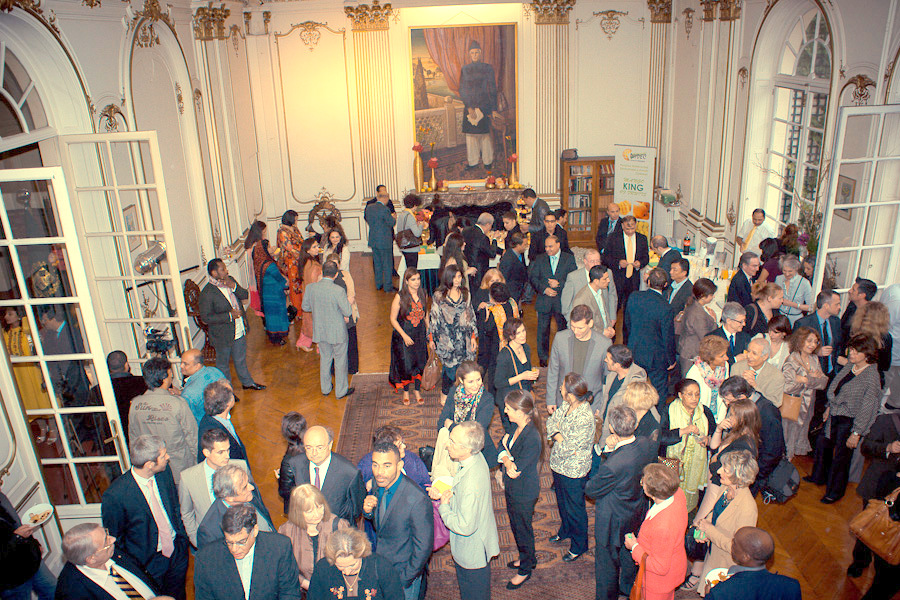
Celebrating Pakistani Mangoes in France

France, July 3, 2013: This special event of introducing Pakistani mangoes to France has played a strong role in generating interest in the French buyers for Pakistani mangoes and they are now interested in meeting value chain players from Pakistan's mango sector. USAID through its Firms Project arranged premium quality mangoes from partner farms to be air shipped to France for the event hosted by the Pakistan Embassy. The project provided technical assistance to process the fruit as per recommended international protocols and standard operating procedures.